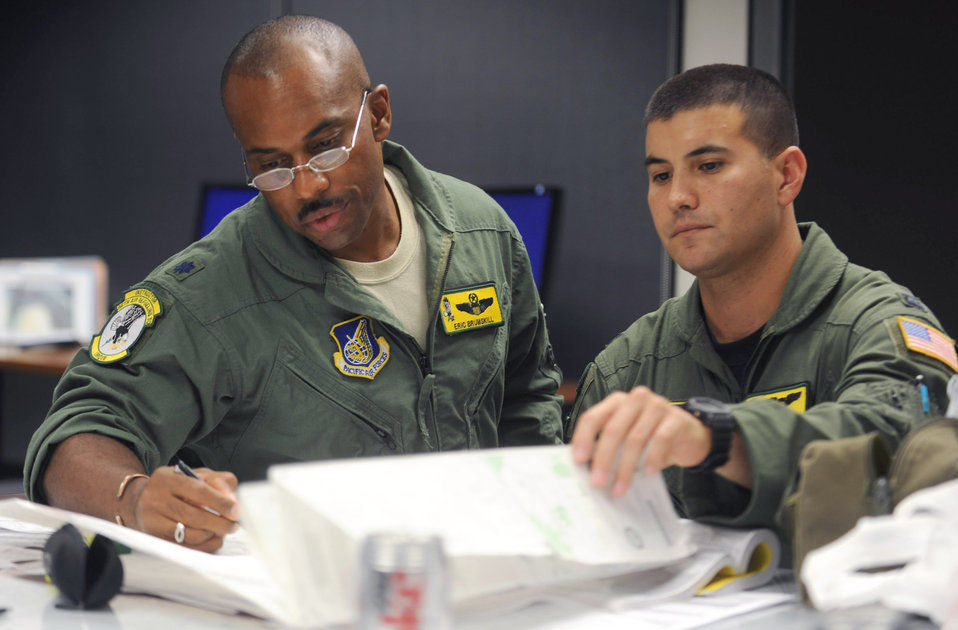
Tanker Toads

Lt. Col. Eric Brumskilll and Capt. James Rorick review flight plans for the second sortie of the 96th Air Refueling Squadron?s first operational refueling mission, Dec. 15, 2010, at Joint Base Pearl Harbor-Hickam, Hawaii. During the mission, a 96th ARS KC-135 Stratotanker joined a KC-135 from the Iowa Air National Guard as part of a two-ship formation to refuel two B-52 Stratofortresses on their way to Guam. Colonel Brumskill and Captain Rorick are KC-135 pilots with the 96th ARS.